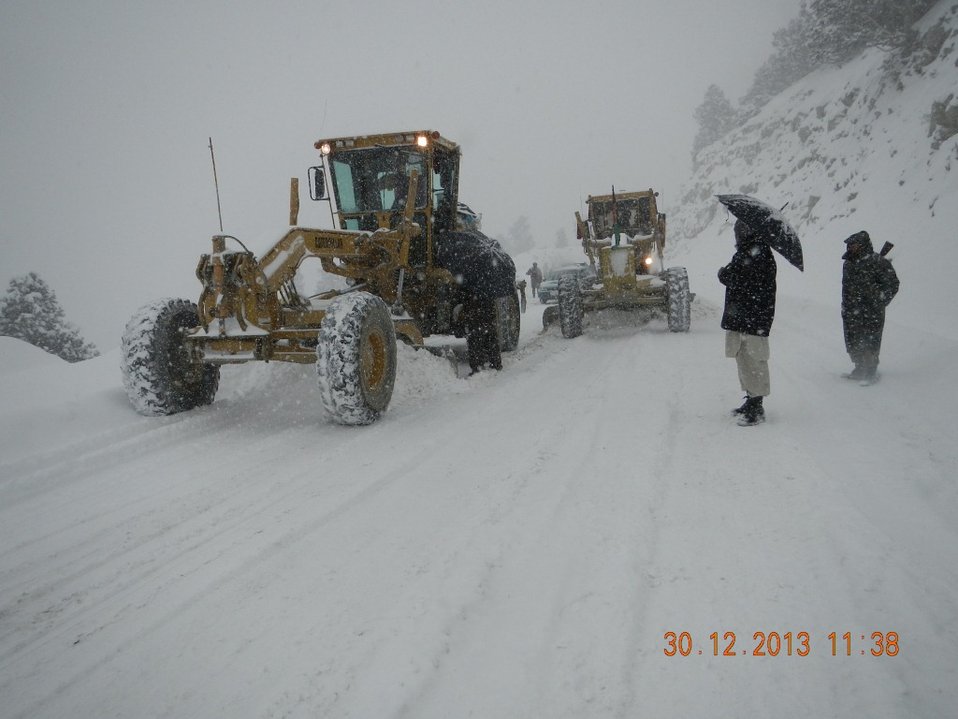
Snow removal work on the Gardez Khost road